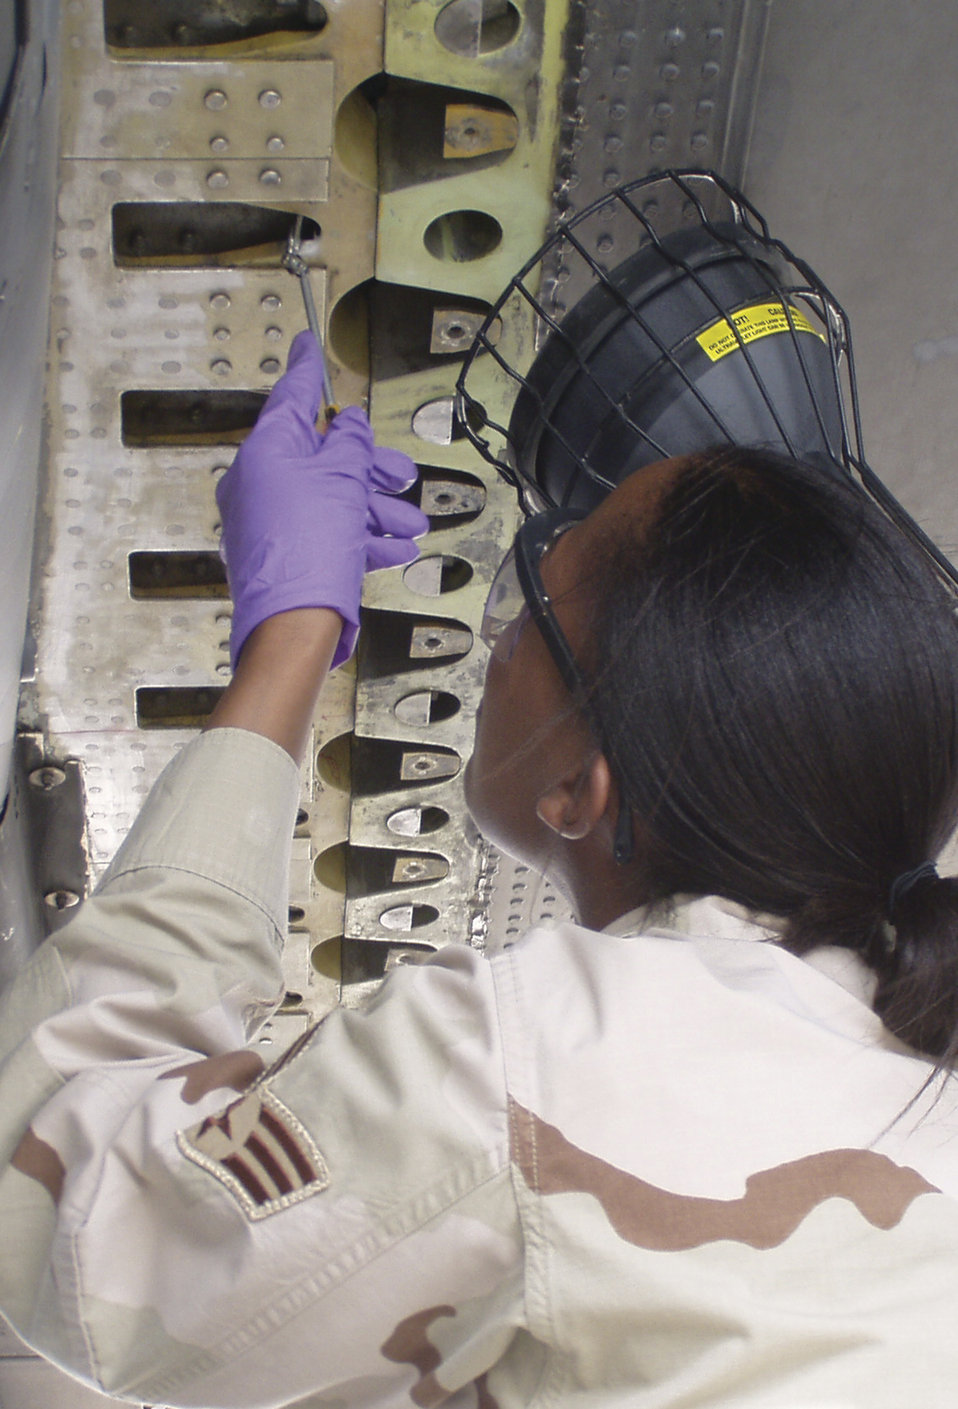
NDI Airmen play big part in mission

SOUTHWEST ASIA -- Senior Airman Kenda Lewis inspects a C-130 Hercules on the flightline April 5. She is assigned to the 379th Expeditionary Maintenance Squadron's nondestructive inspection lab at a forward-deployed location and is from Royal Air Force Lakenheath, England.